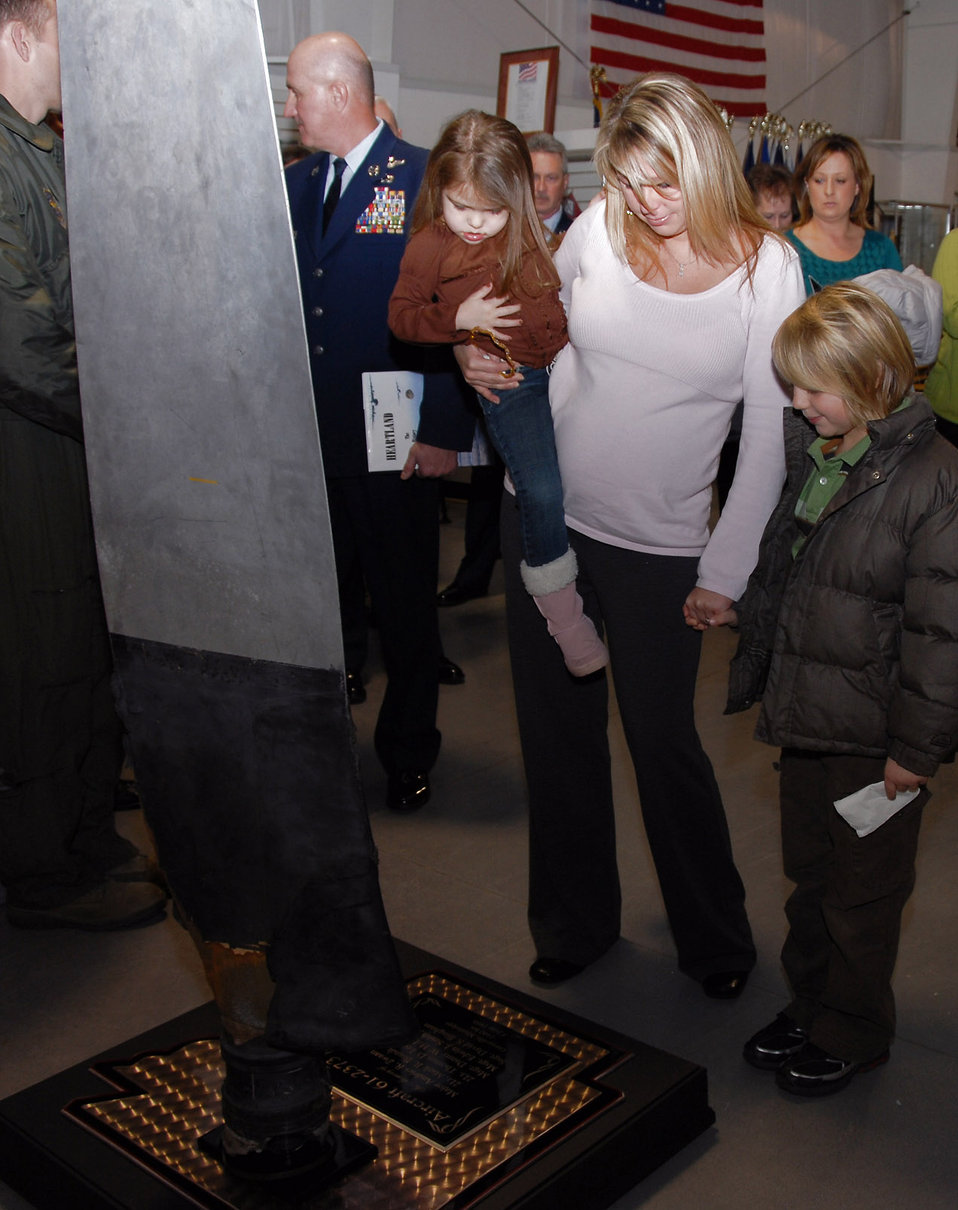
Airmen dedicate memorial to 1988 C-130 crew

Master Sgt. Danny Holland's daughter, Terri Mitchell, with her children Blake and Danyell attended the memorial dedication Jan. 13 at the Jacksonville Museum of Military History in Arkansas. Sergeant Holland was one of six aircrew members killed onboard a C-130 Hercules that crashed June 8, 1988, during a training mission near the Greenville airport in Mississippi.